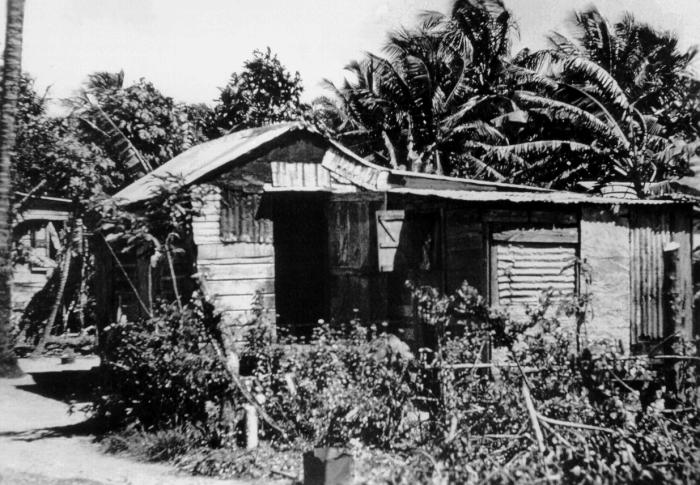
This photograph depicts a typical native hut in Puerto Rico, one of the most densely populated areas in the world.